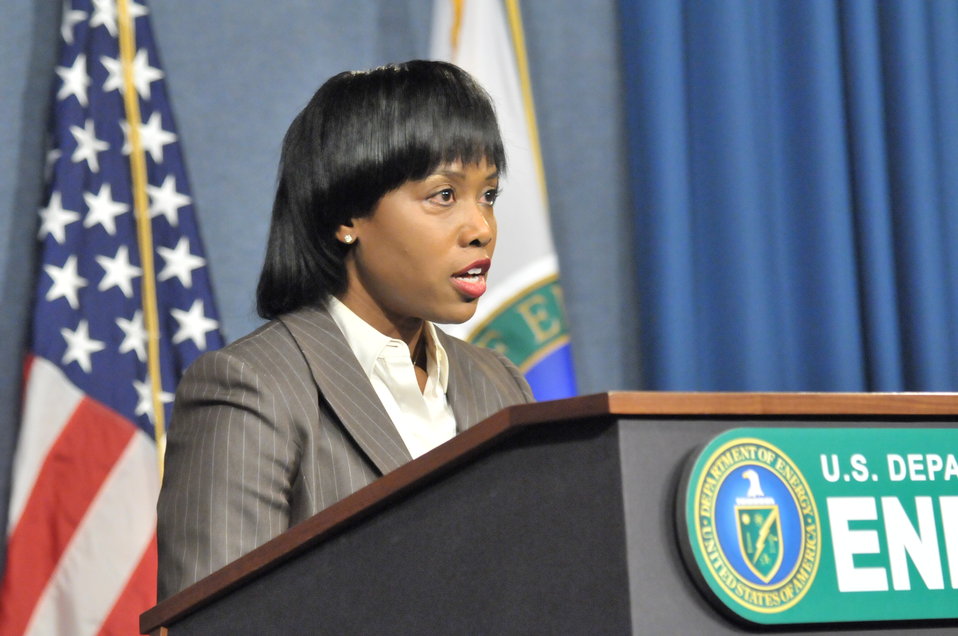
DEPARTMENT OF ENERGY -MARTIN LUTHER KING / BLACK HISTORY MONTH COMMEMORATIVE PROGRAM WITH DOE SECRETARY E. MONIZ IN ATTENDANCE